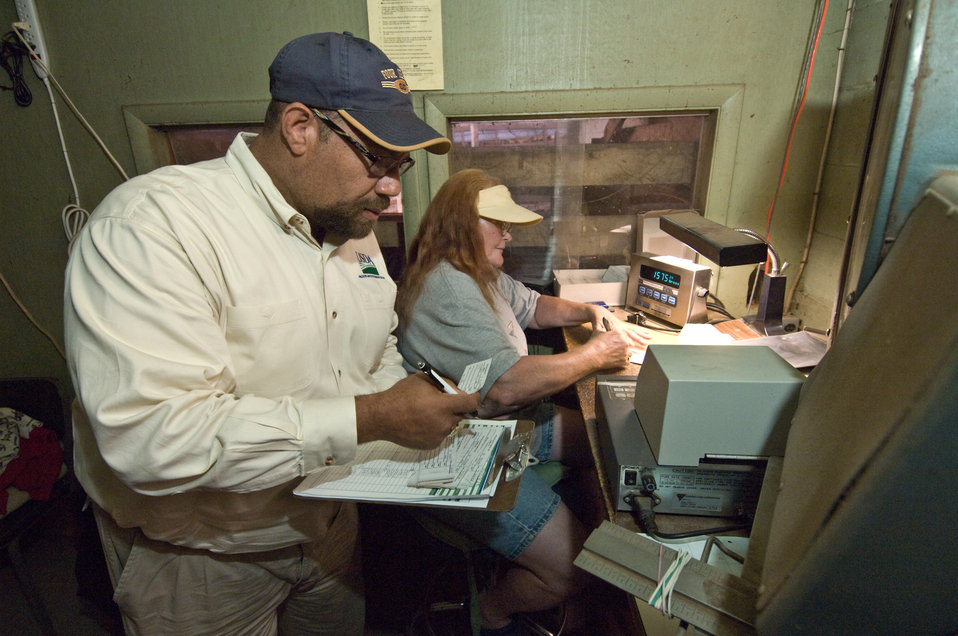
U.S. Department of Agriculture (USDA) Grain Inspection, Packers, and Stockyards Administration (GIPSA) resident agent Lawrence Houston observes as a livestock market’s weigh master reweighs a cow during a livestock check weigh-in at a market in Paradise, Pennsylvania on July 22, 2008. GIPSA is a USDA agency that facilitates the marketing of livestock, poultry, meat, cereals, oilseeds, and related agricultural products, and promotes fair and competitive trading practices for the overall benefit of consumers and American agriculture.